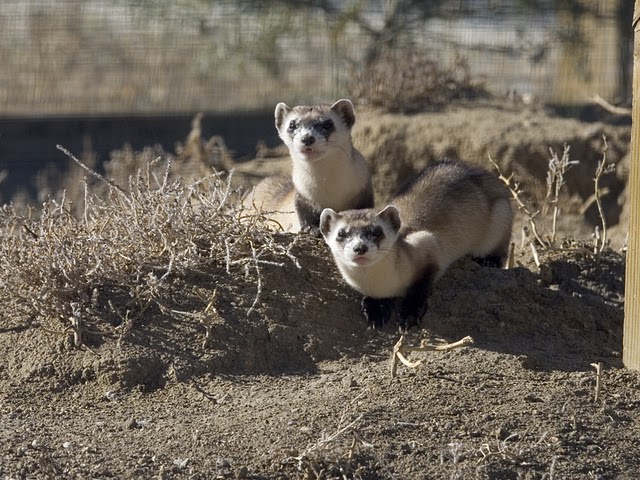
National Black-footed Ferret Conservation Center